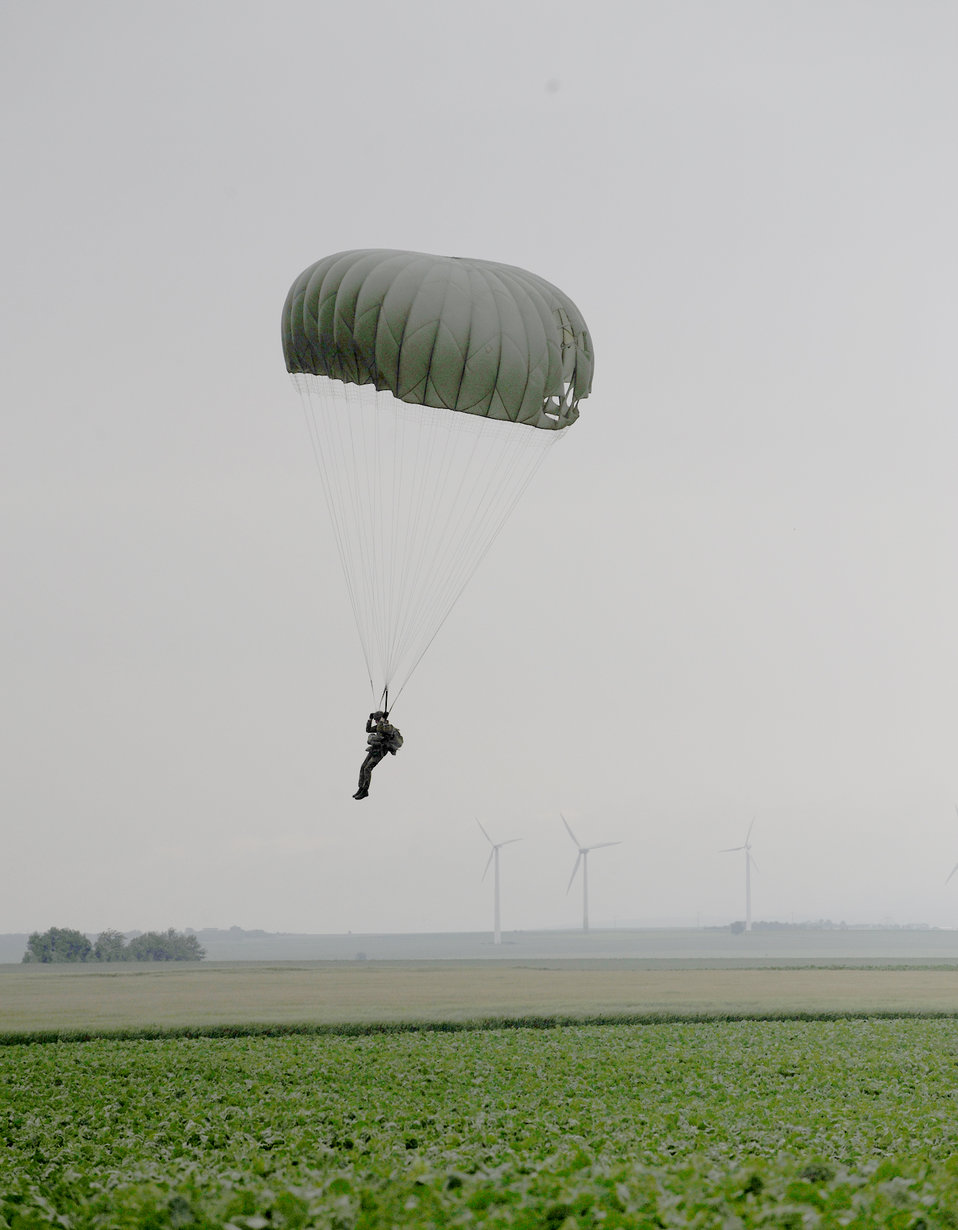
NATO Jump Week 2010

A servicemember parachutes from a C-17 Globemaster III June 17, 2010, over drop zone at Alzey, Germany, during International Jump Week 2010.